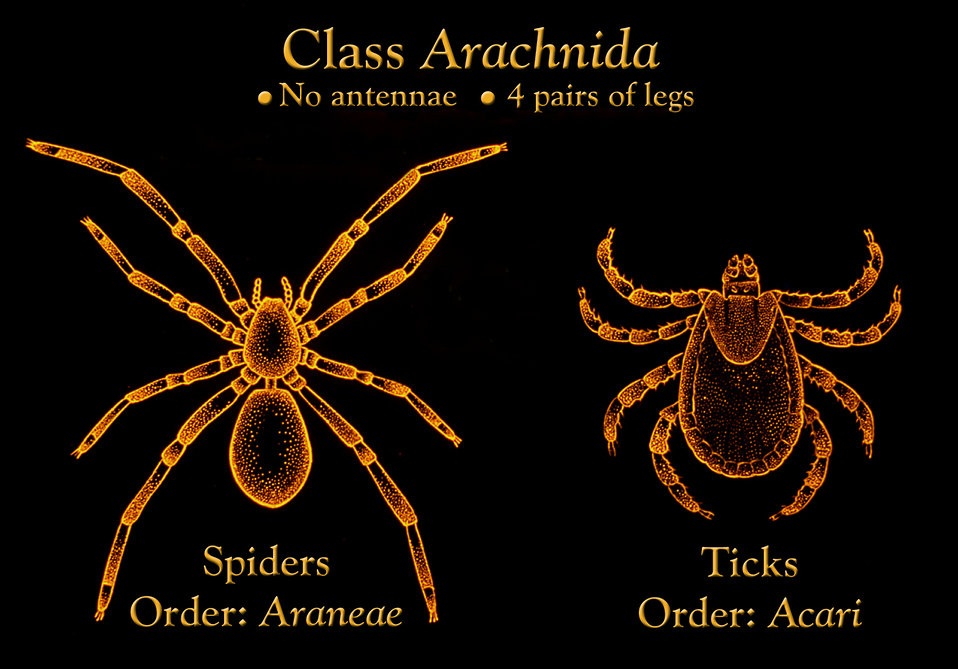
This image shows the anatomic differences between the two arachnid Orders of spiders, Araneae, and ticks, Acari.